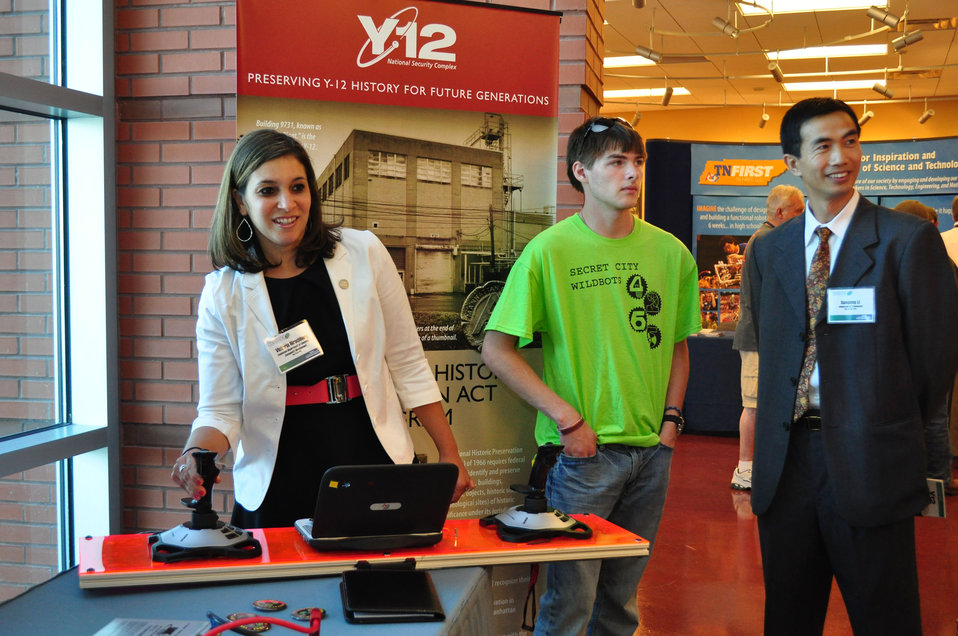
Tennessee Valley Corridor 2013 Oak Ridge

13-062 DOE photo Lynn Freeny 5-29-2013 Oak Ridge Tennessee